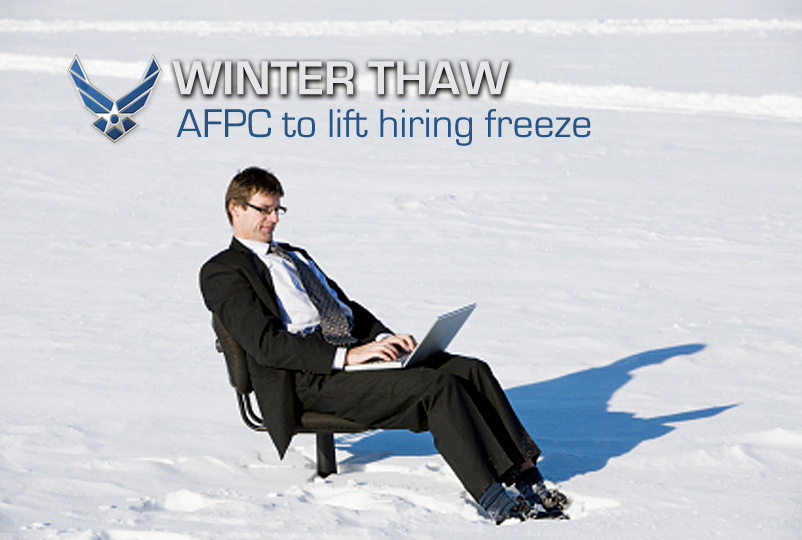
Winter Thaw